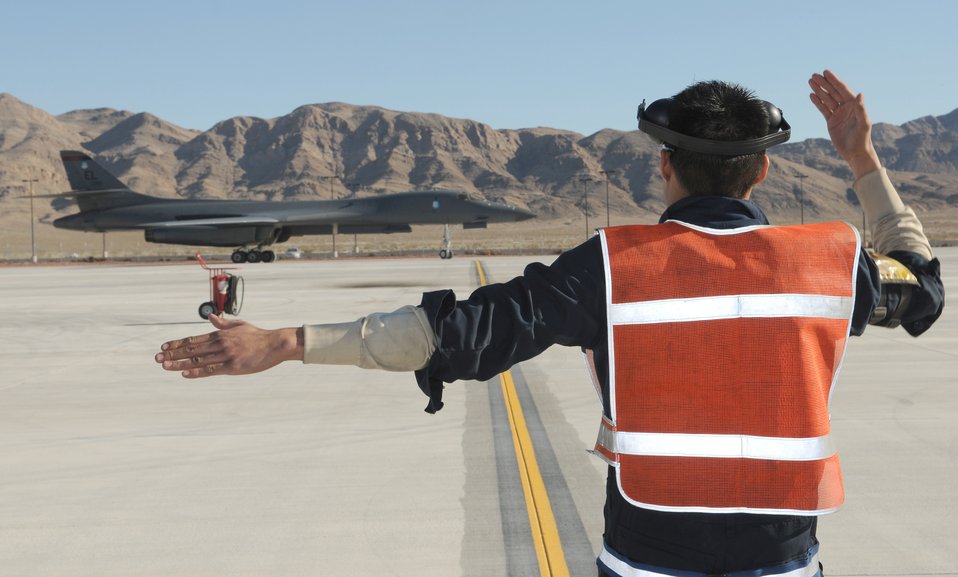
Right this way

Senior Airman Kevin Faulds marshals a B-1 Lancer Jan. 26, 2011, at Nellis Air Force Base, Nev., after an exercise Red Flag mission. Airman Faulds is a crew chief assigned to the 28th Aircraft Maintenance Squadron at Ellsworth AFB, S.D.